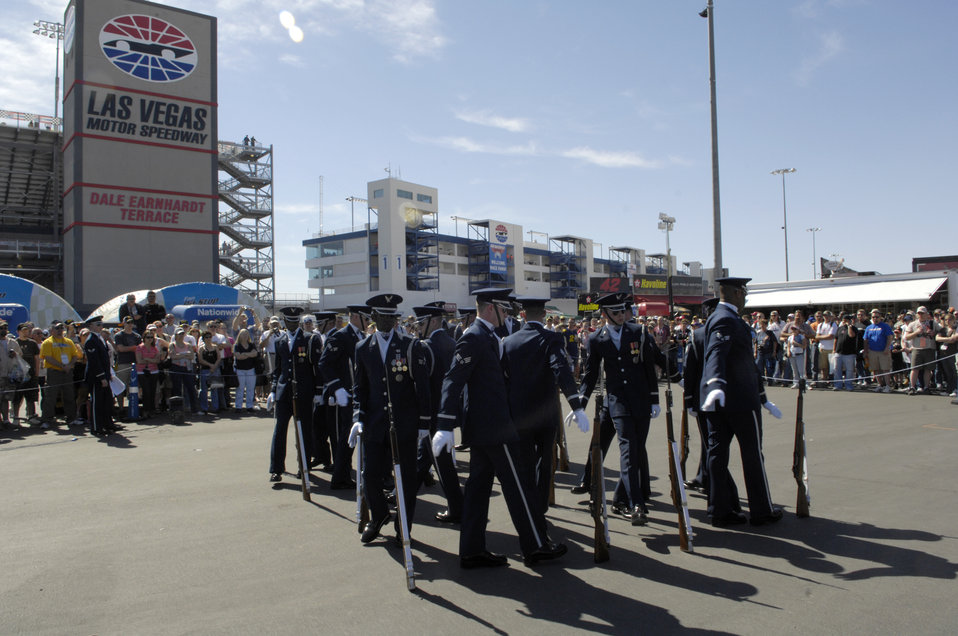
Drill Team performs at Busch Series Race

The United States Air Force Honor Guard Drill Team performs at the Las Vegas Motor Speedway, Las Vegas, Nev., March 10, 2007. The Drill Team is the traveling component of the Air Force Honor Guard and tours Air Force bases world wide showcasing the precision of today's Air Force to recruit, retain, and inspire Airmen for the Air Force mission.